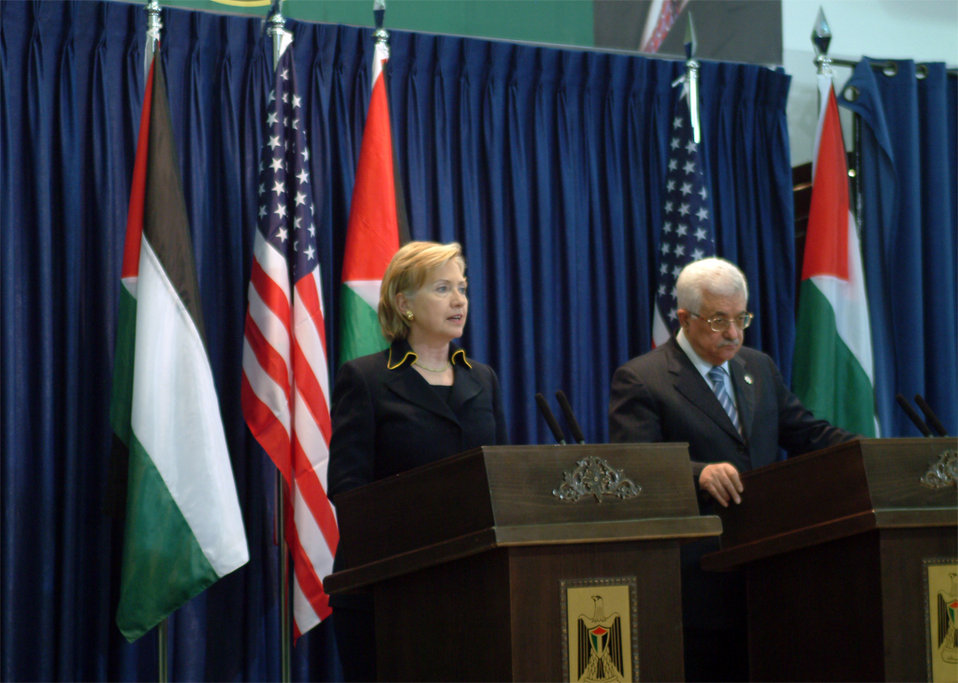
Secretary Clinton With Palestinian Authority President

Secretary Clinton at a press conference with Palestinian Authority President Mahmoud Abbas in Ramallah March 4, 2009.